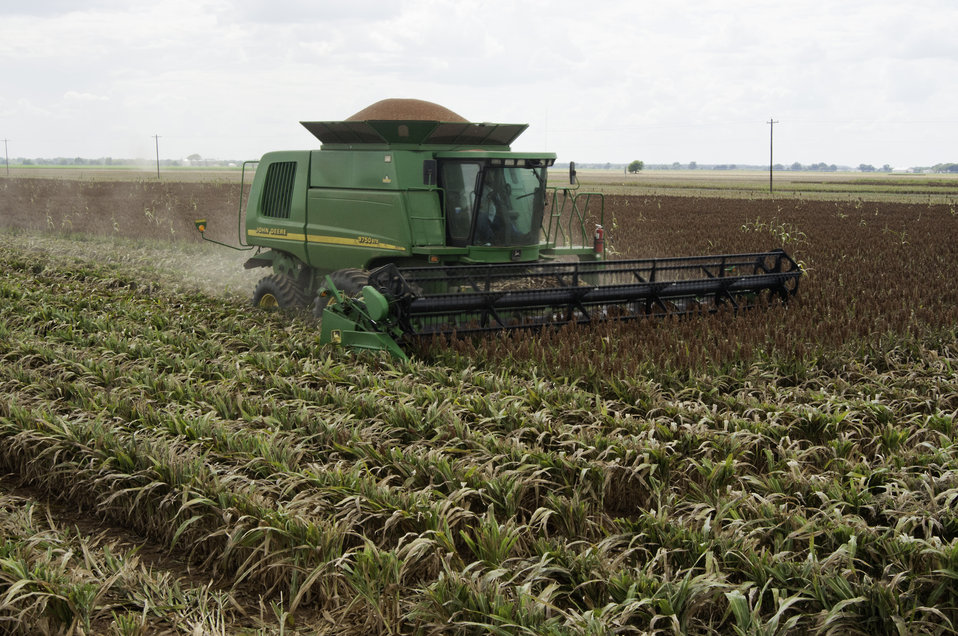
Grain sorghum is harvested on the Wilder Farms in Navasota, TX on Aug. 23, 2013.